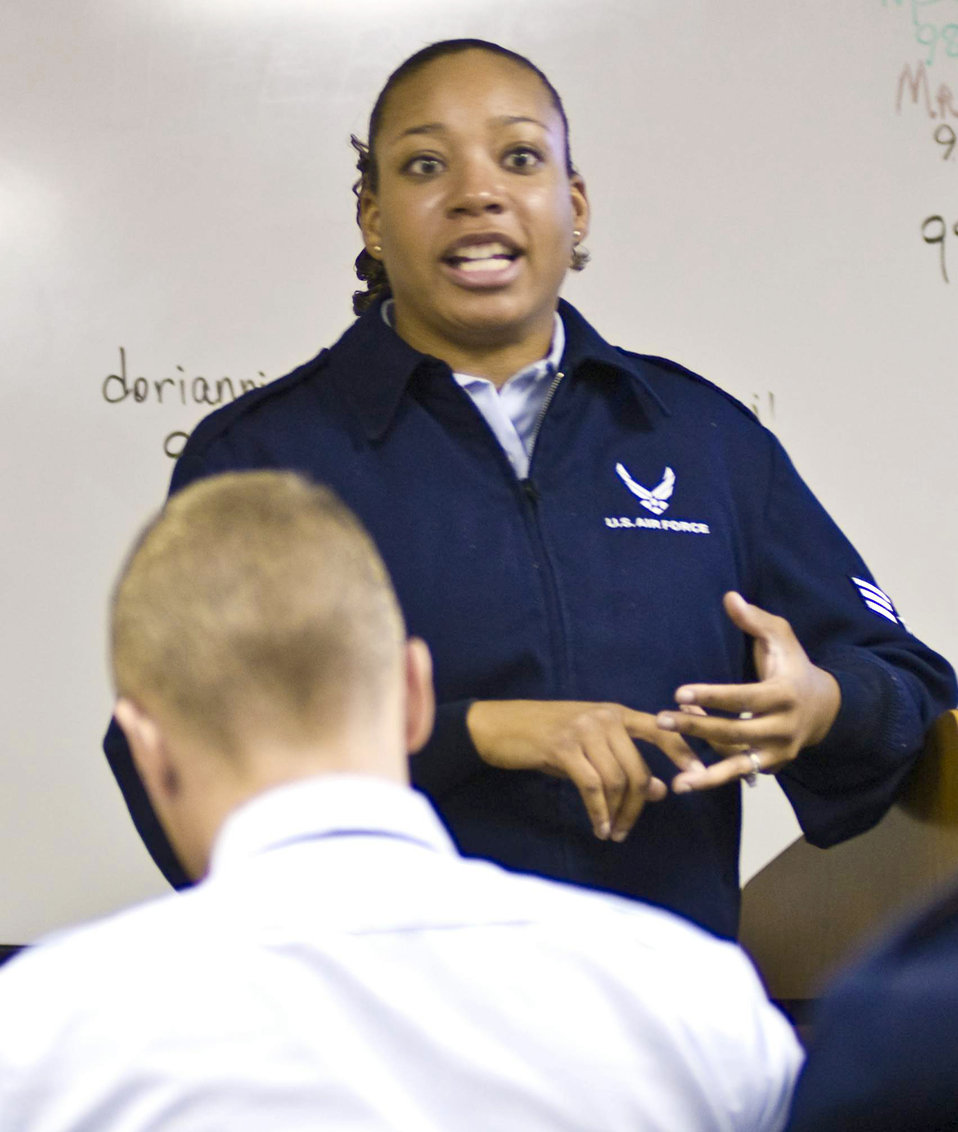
Airman continues brother's legacy, career

Senior Airman Doriannicole Standish briefs first-term Airmen Jan. 31, 2011, at Little Rock Air Force Base, Ark. Airman Standish is serving under the Wounded Warrior Project under the Warrior to Work Program to finish the enlistment of her brother who was killed in action during a 2007 deployment to Iraq. Airman Standish is a 19th Force Support Squadron enlisted promotions clerk.